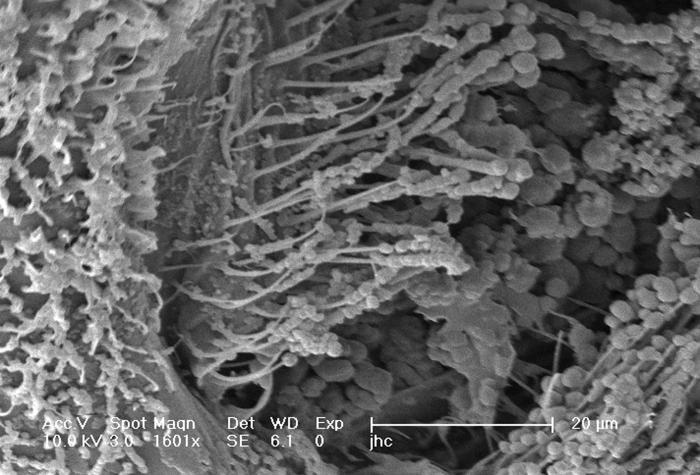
At a higher magnification of 1601x, this scanning electron micrograph (SEM) revealed some of the morphologic features displayed on the exoskeletal surface of an Anopheles gambiae mosquito. In the field of view was the left "mesothoracic spiracle", which is a cavernous depression in the exterior thoracic surface through which the mosquito's breathing occurs. Note the multitude of sensorial hairs, know as "setae", which cover the surface, and the pit's interior. The globular material seeming to coat the setae represents particulate matter picked up by the mosquito from its environment.